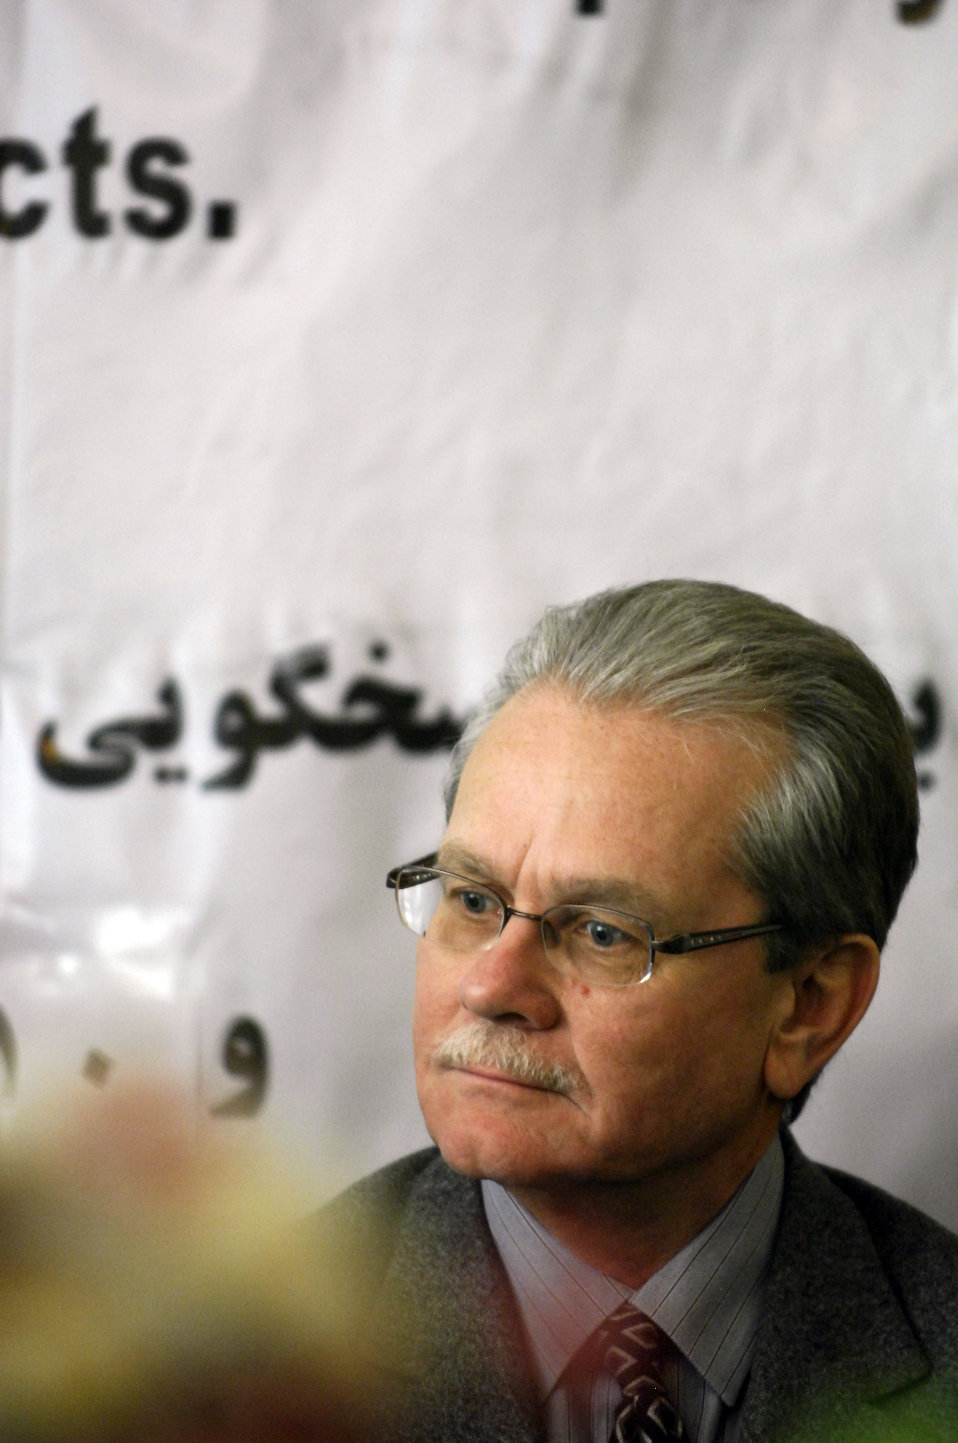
Care85 (1)